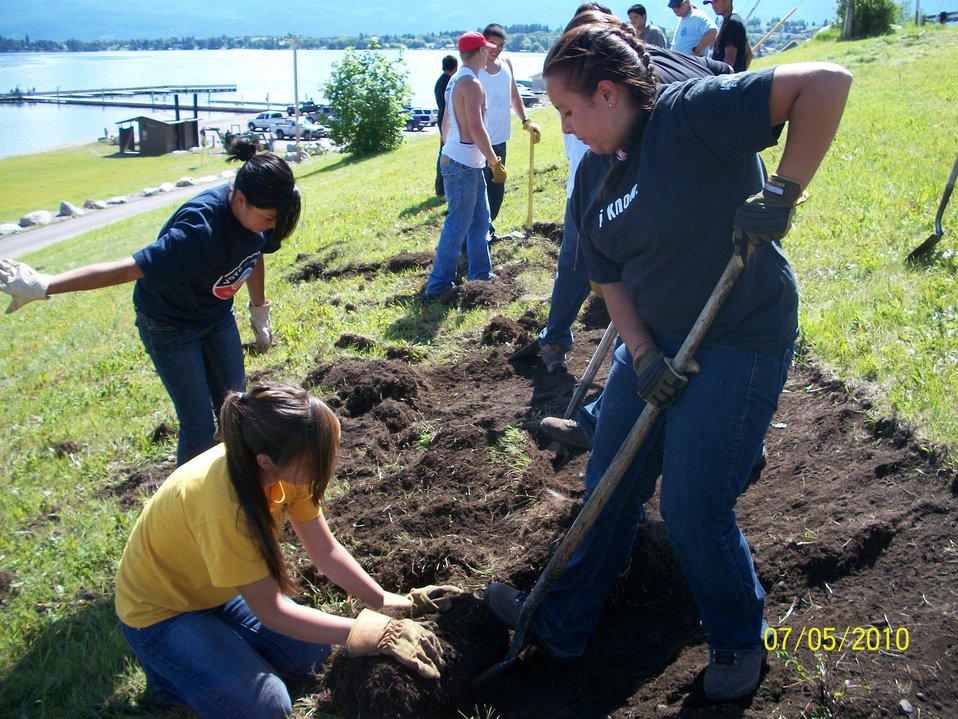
Tribal Youth at Work

Tribal youth constructing a hiking trail. Creston National Fish Hatchery initiated a Tribal Youth Conservation Corp Program in cooperation with the Salish Kootenai College, the National Conservation Training Center and the Washington Office Fisheries Program.